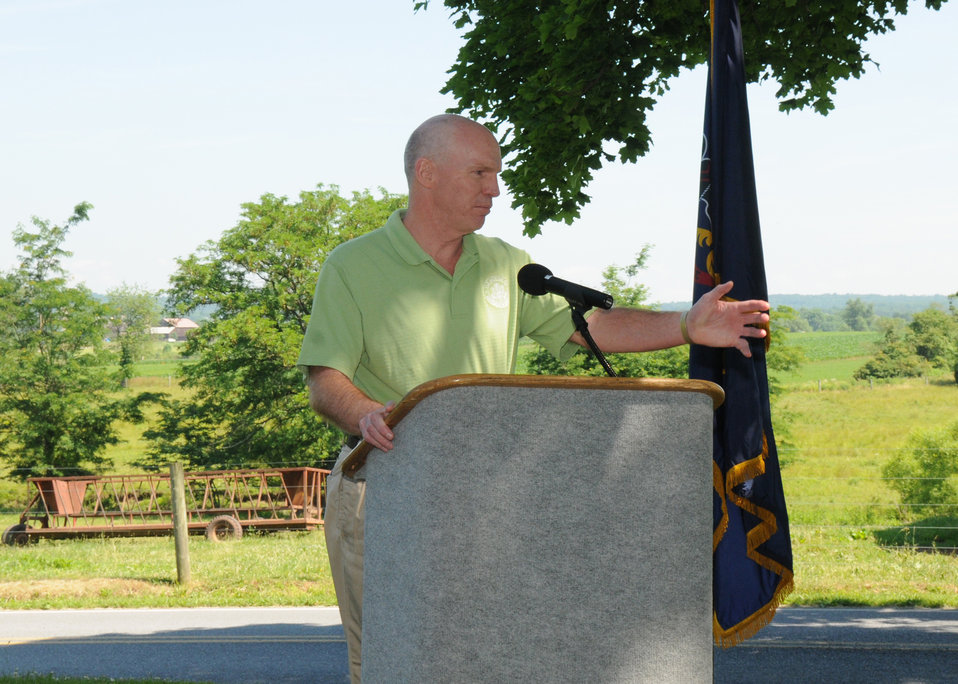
U. S. Congressman (PA-17th District) Tim Holden makes remarks at the announcement of the Chesapeake Watershed Project held at the Eby-Patterson farm in Hershey, PA, on Friday, June 18, 2010. USDA photo 10di1409-71.